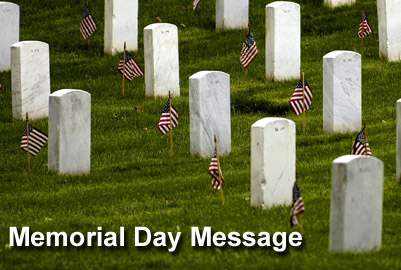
Leaders issue Memorial Day message

In a joint Letter to Airmen, Secretary of the Air Force Michael Donley and Air Force Chief of Staff Gen. Norton Schwartz remember those who have been killed, wounded or permanently disabled in a Memorial Day message.